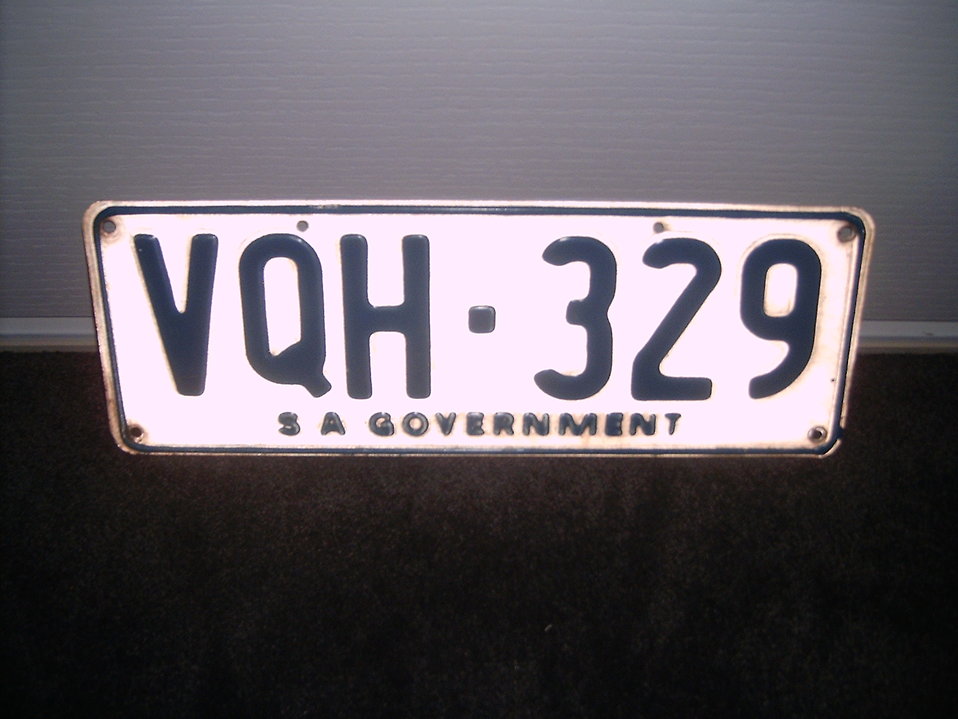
Example of 'SA Government' license plate.